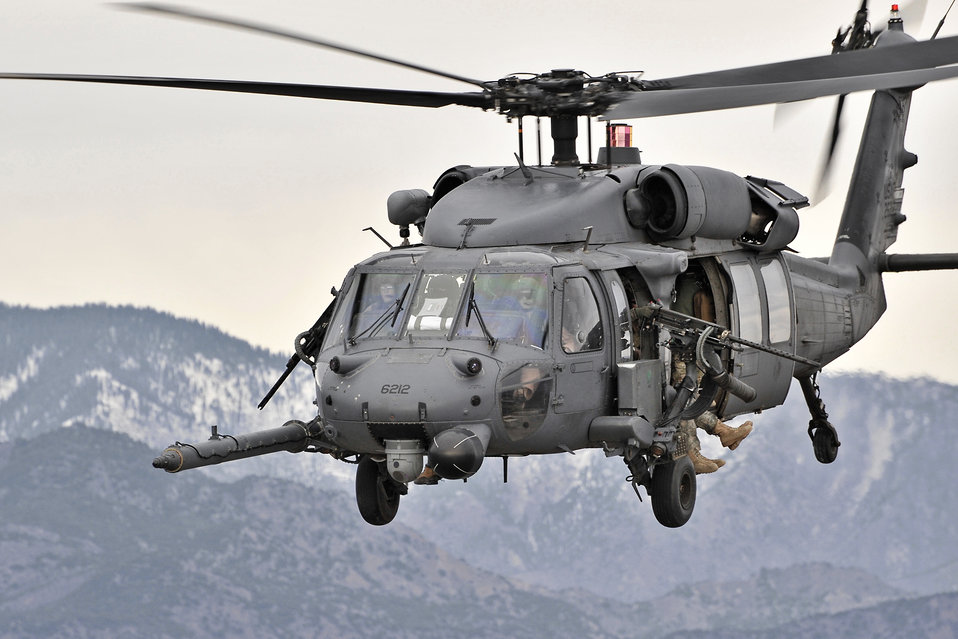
Just another day at work

Airmen assigned to the 83rd Expeditionary Rescue Squadron fly an HH-60 Pave Hawk Feb. 9, 2011, over Afghanistan.